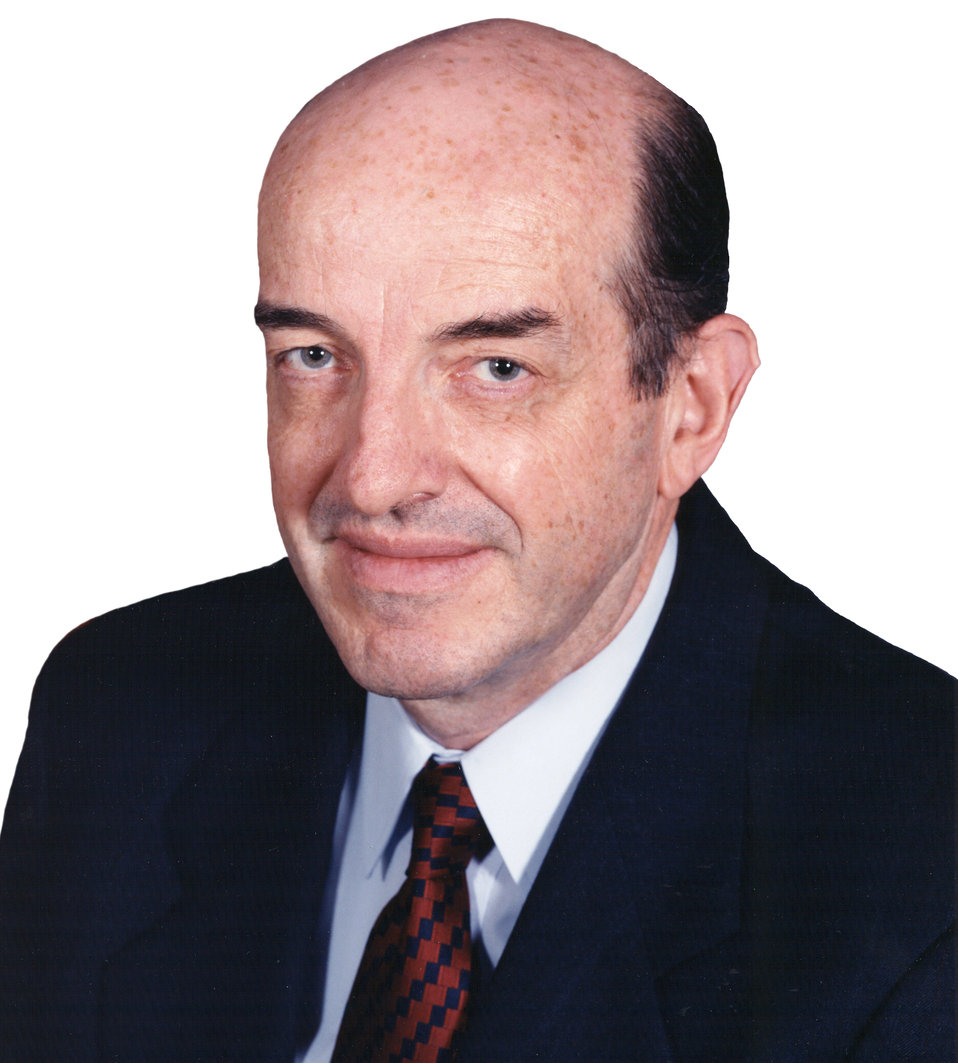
Michael Copps